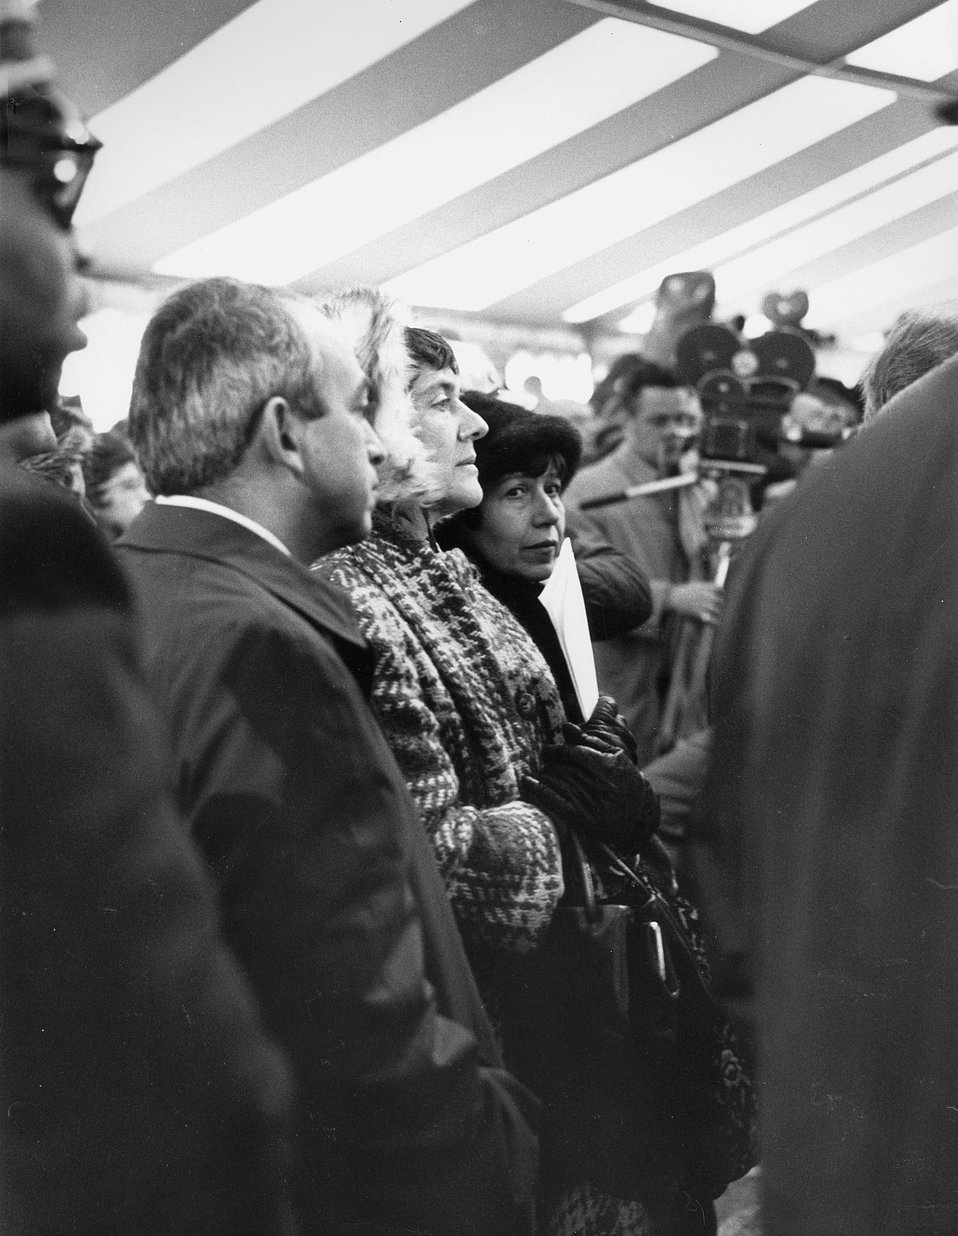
Edwin Goldwasser, Deputy Director of NAL, Mrs. Goldwasser and Mrs. Robert Wilson watching the Linac groundbreaking ceremony. 1968